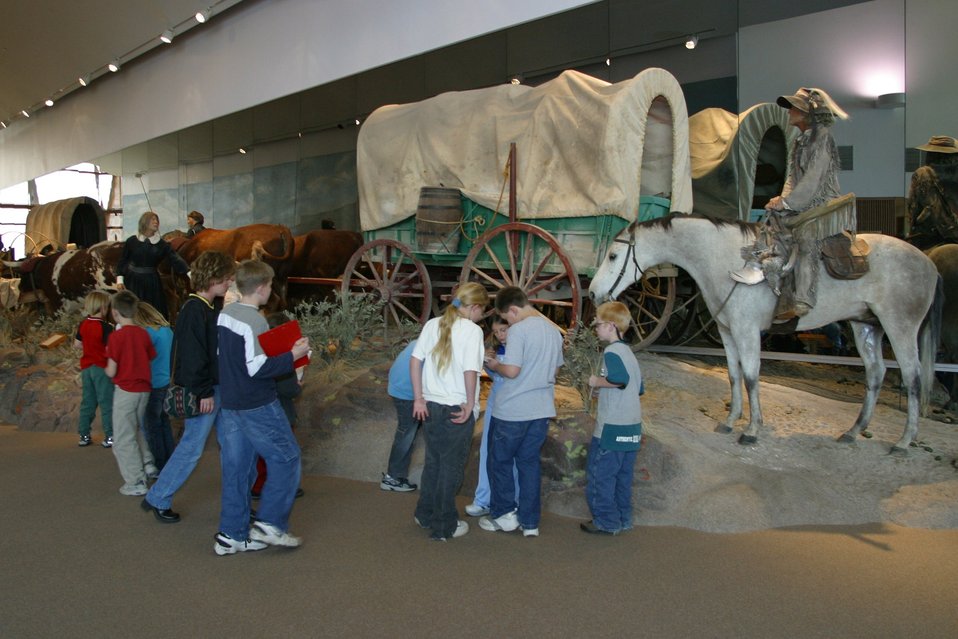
Hundreds of school children visit the National Historic Oregon Trail Interpretive Center every year.